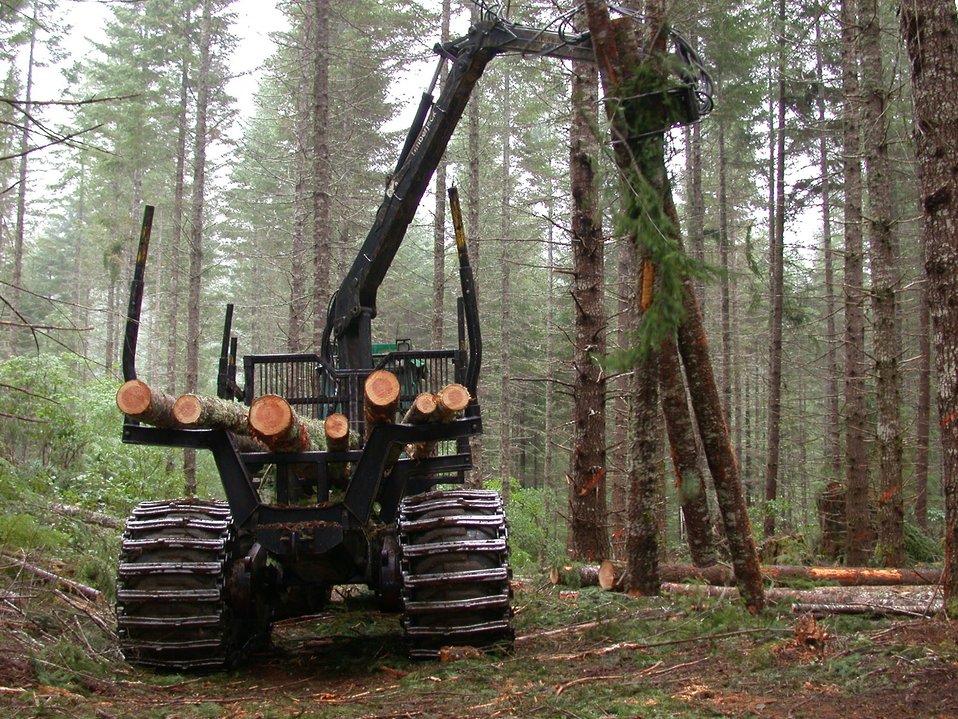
Camas East Timber Sale in Late Successional Reserve.